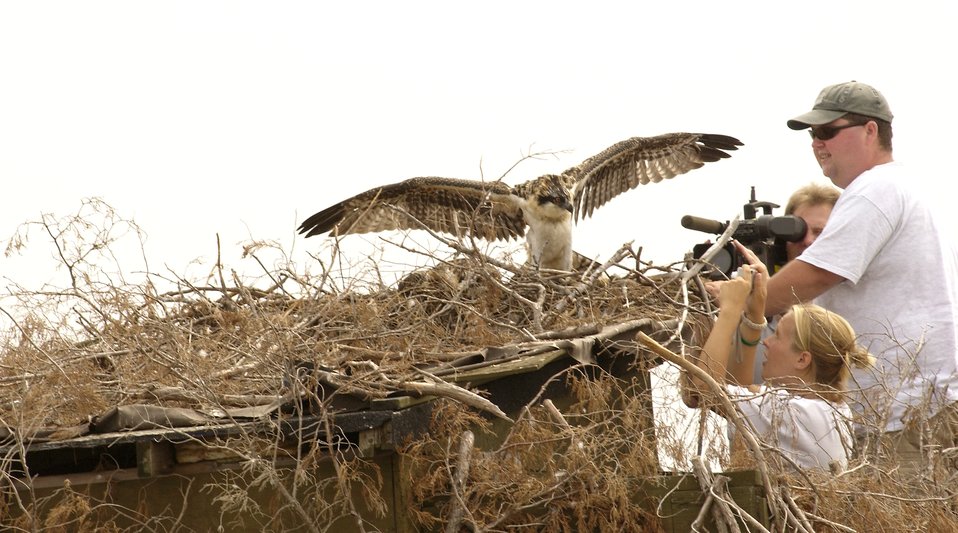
Ospreys, Eagles share airspace at Langley

LANGLEY AIR FORCE BASE, Va. -- An osprey hatchling is photographed by military and civilian media during an osprey relocation effort. Eleven osprey were relocated from Langley to a conservation facility in Cumberland, Ohio, to control the population and minimize the risk of potential bird strikes.